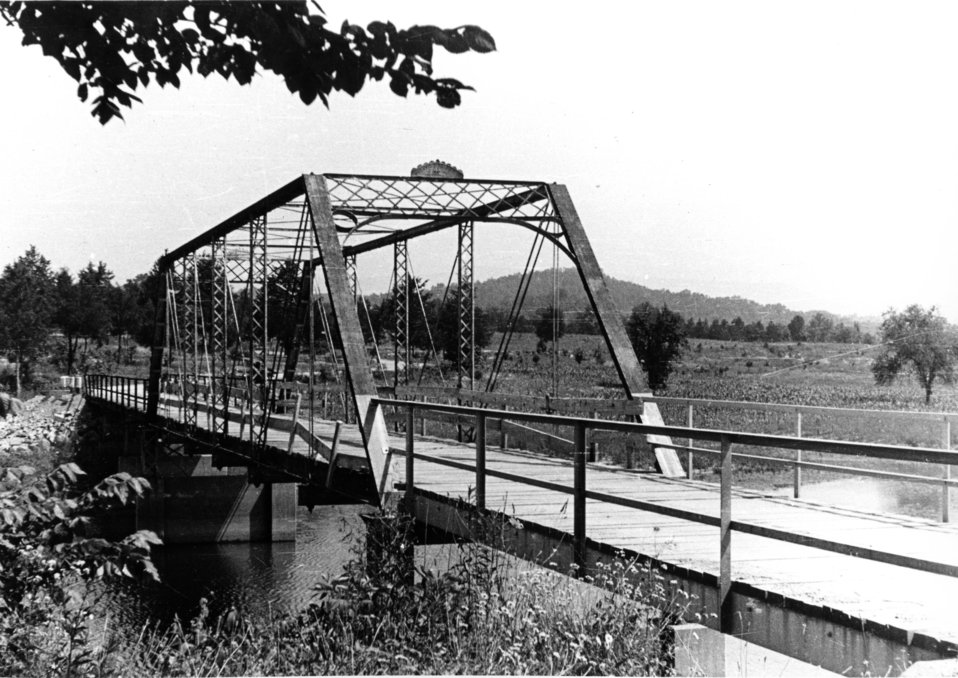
Recreation at Oak Ridge